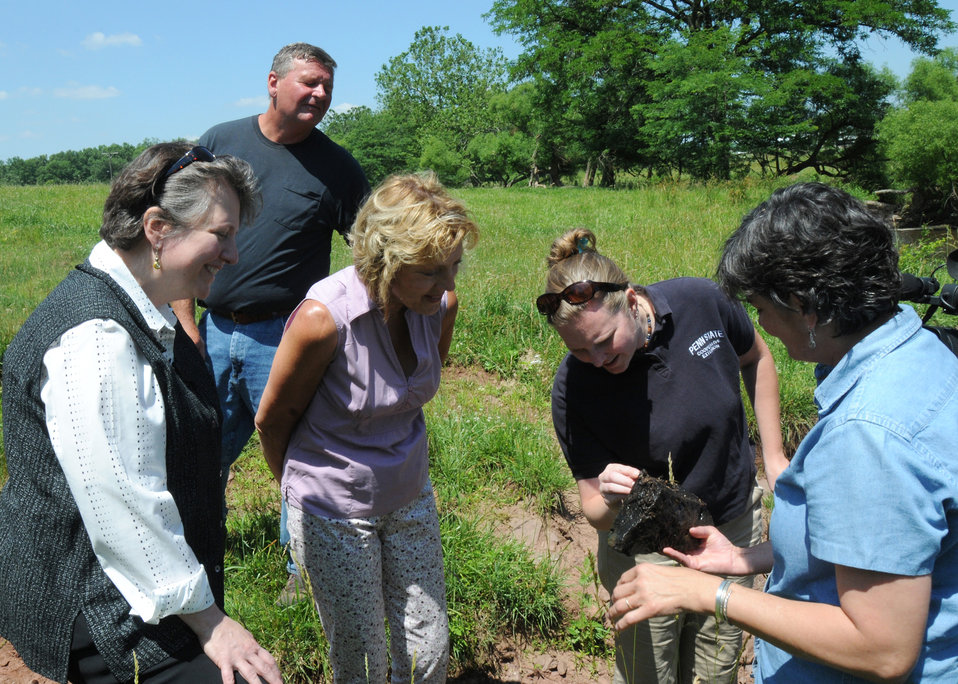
Agriculture Deputy Secretary Kathleen Merrigan and Mrs. Eby-Patterson and husband, Daniel are shown a rock from their creek that has tiny water creatures that are indicative of the health of a clean water supply by local water conservation specialists on their farm in Hershey, PA, on Friday, June 18, 2010. USDA photo 10di1410-221.